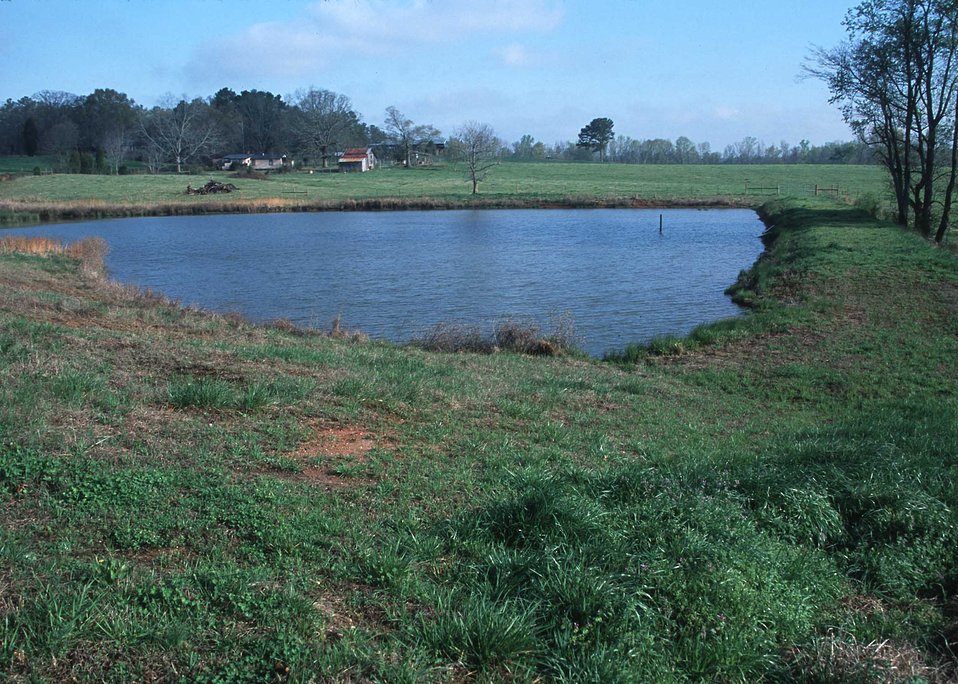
Wetland area restored and buffer protection from grazing livestock. Lyons, Georgia.